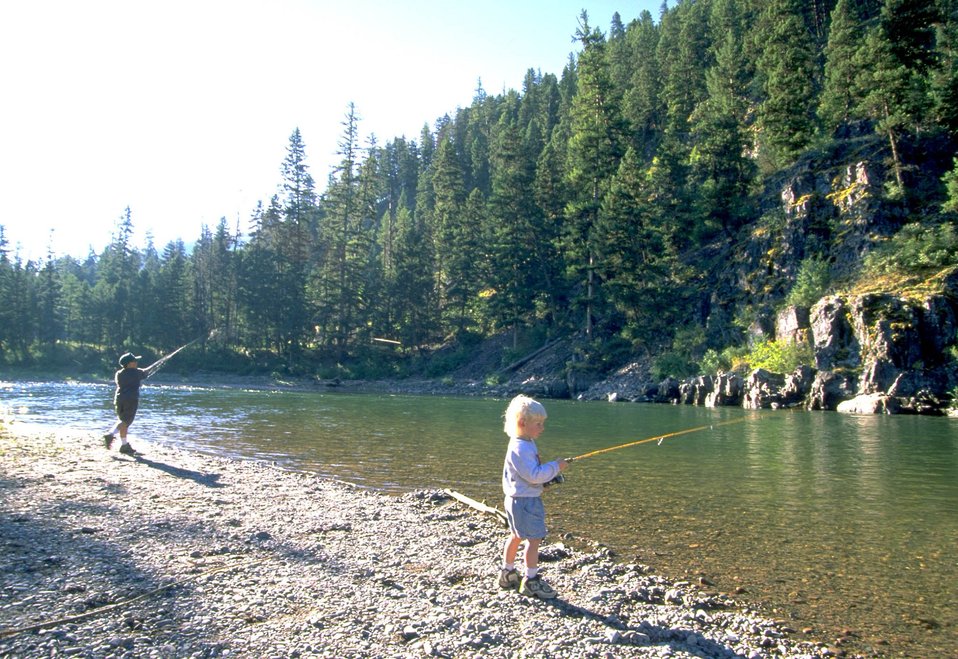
Fishermen on the Blackfoot River